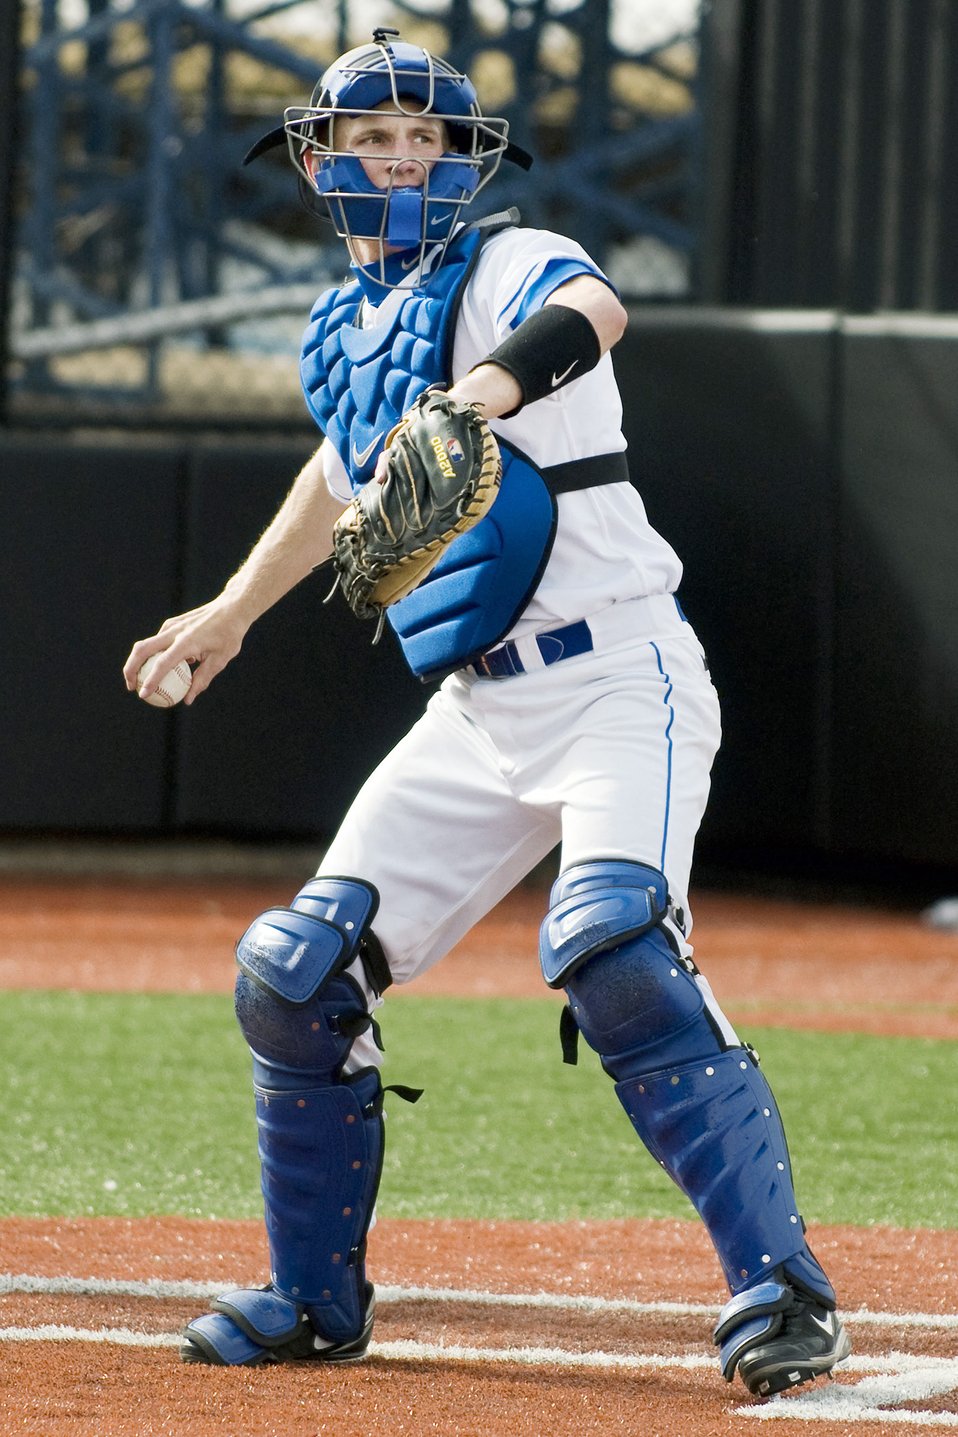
Falcons defeat the Cougars

Falcon freshman catcher Alex Bast gets ready to throw the ball down to second base during the Falcons March 30, 2010 contest against Colorado Christian University held at the U.S. Air Force Academy's Falcon Field in Colorado. The Falcons defeated the Cougars 25-7.